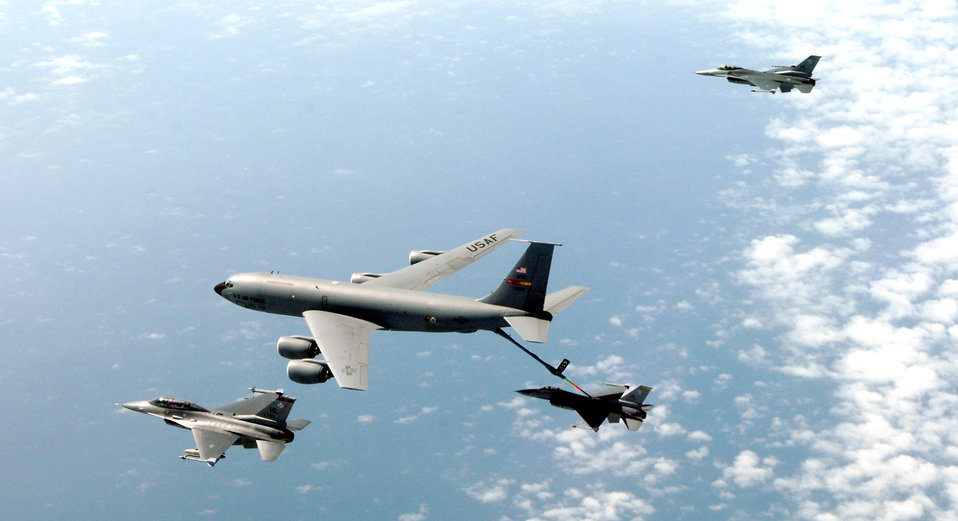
Airmen work alongside Peruvian military during joint exercise

A KC-135 Stratotanker refuels F-16 Fighting Falcons over Peru Feb. 15 during Falcon and Condor 2007, a joint U.S. and Peruvian exercise. The exercise allows the U.S. military to build relationships with military and civilian leaders of Peru.